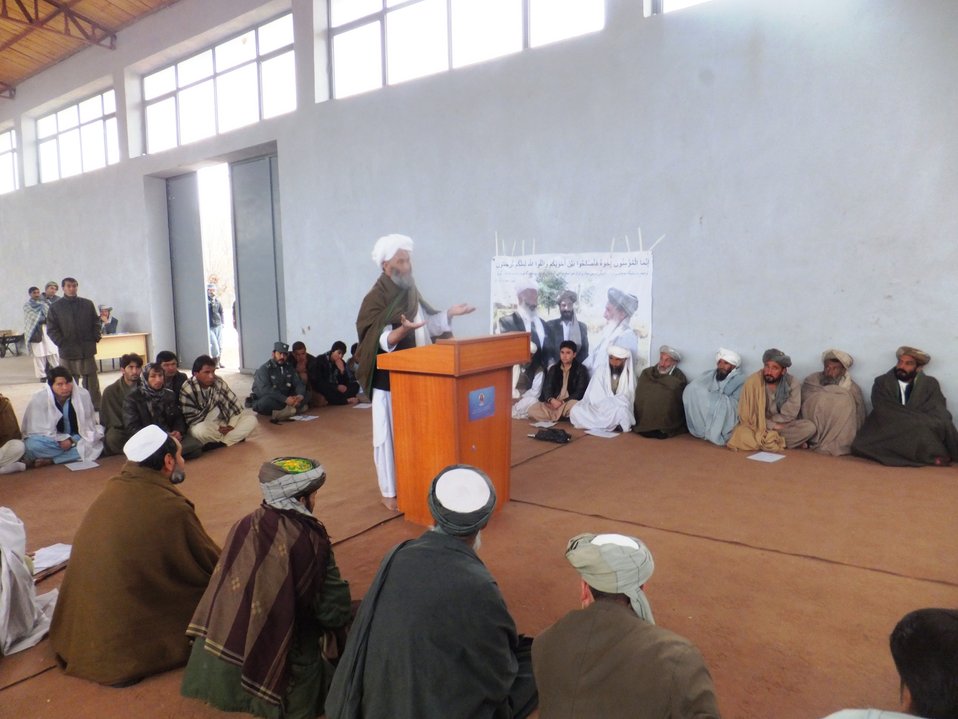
The Qadis District Governor organized a Peace meeting with participation of 99 government officials, Ulema, youth and women on December 1